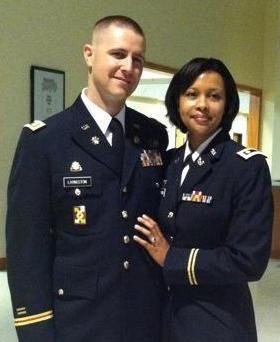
Ben Livingston, a Human Resources Specialist, joined the Army in 1992, did four years Active Duty and still serves as a Army Reservist. On Active Duty he served at Ft Bragg and Sinai Egypt, Ft Stewart. As a Reservist he was assigned to units is Kansas and Virginia and he deployed to Iraq/Kuwait for Operation Iraqi Freedom in 2003 for 13 months. As an Enlisted man the highest rank he held was Sergeant First Class, as a Commissioned Officer he’s a Captain. His wife is also an Army officer, a major with 11 years of service.